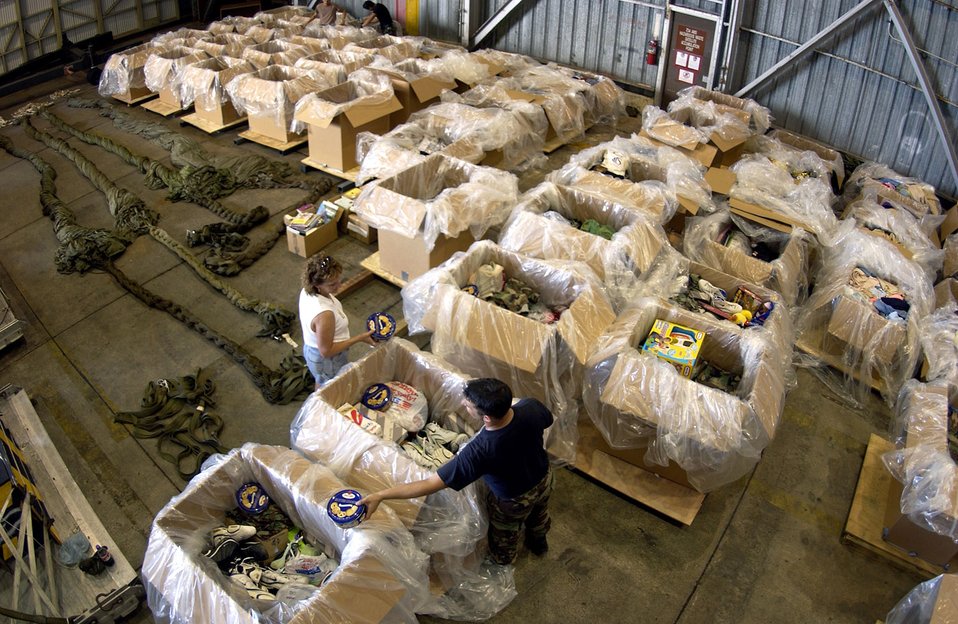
Operation Christmas Drop

ANDERSEN AIR FORCE BASE, Guam (AFPN) -- Volunteers sort donated Operation Christmas Drop food items into individual boxes at a collection center in Hangar 5 here today. The donations will be used in this year's Operation Christmas Drop, a 53-year-old tradition. C-130 Hercules aircraft from Yokota Air Base, Japan, flew here today, load up the donated gifts and